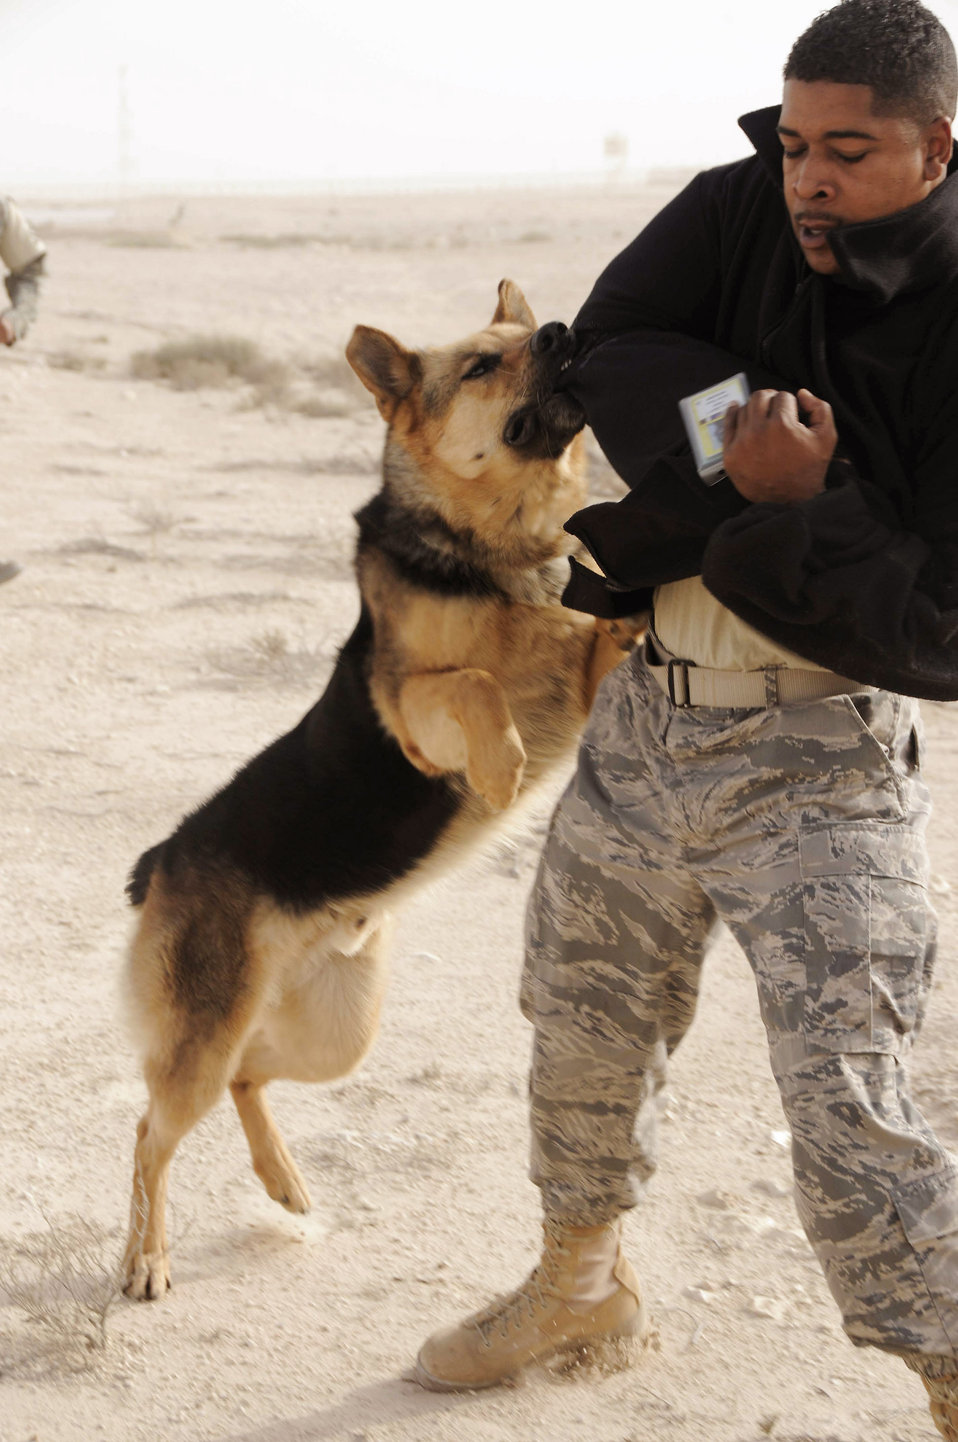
K-9 team keeps crime on a leash

Staff Sgt. Kent Bass wears a protective bite suit during a practice exercise March 4 with military police working dog Bruno in Southwest Asia.